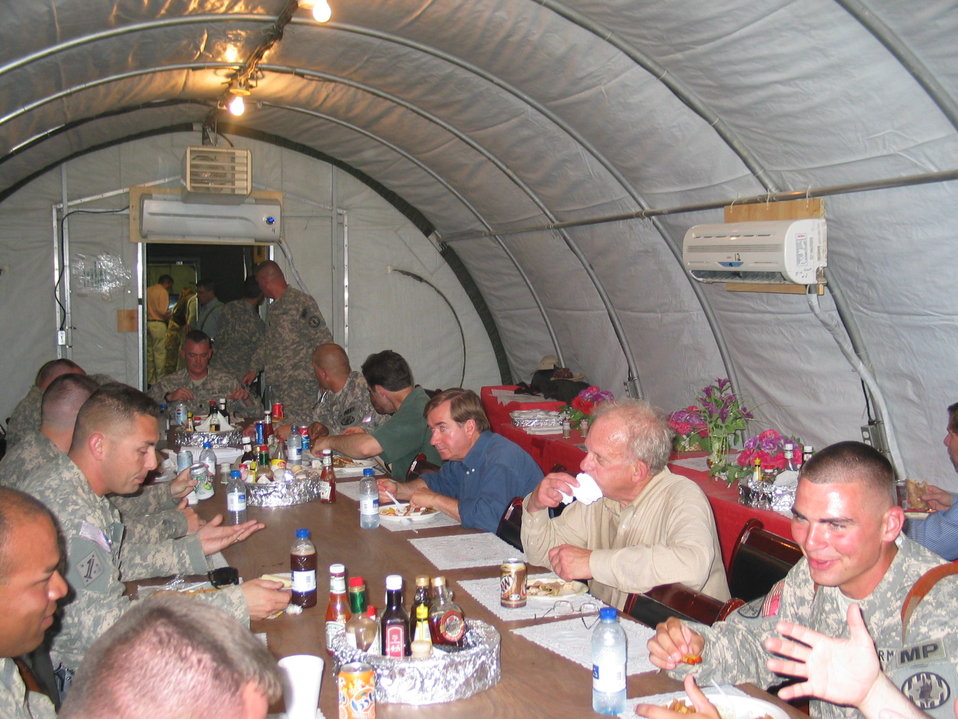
CODEL Berman